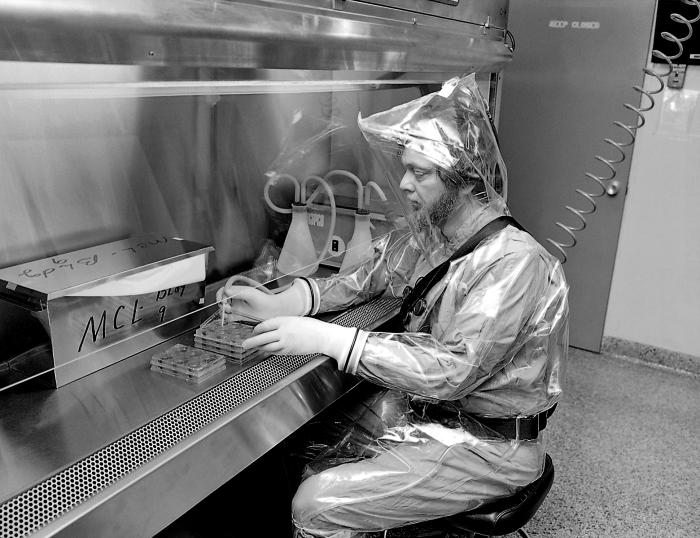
While wearing an air-tight pressurized suit, this 1978 photograph depicted Dr. Karl M. Johnson as he was carrying out a laboratory procedure, which was located beneath an air flow hood inside one of the CDC's early Maximum Containment Laboratories.